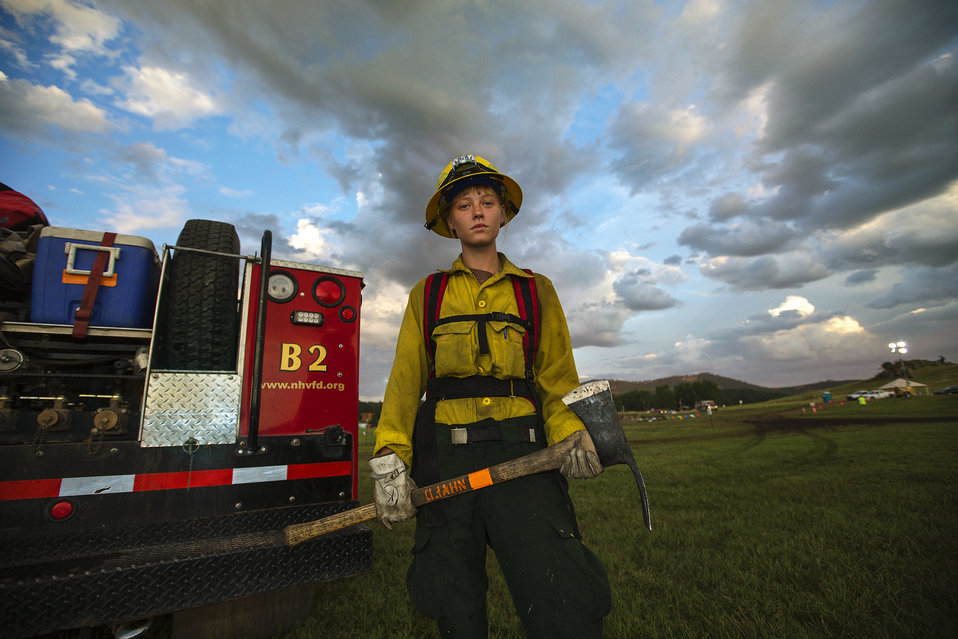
Rapid City, SD North Haines Volunteer Fire Department fireperson Kelsey Chaloupka fights the Myrtle Fire in Black Hills National Forest, SD on July 24, 2012.